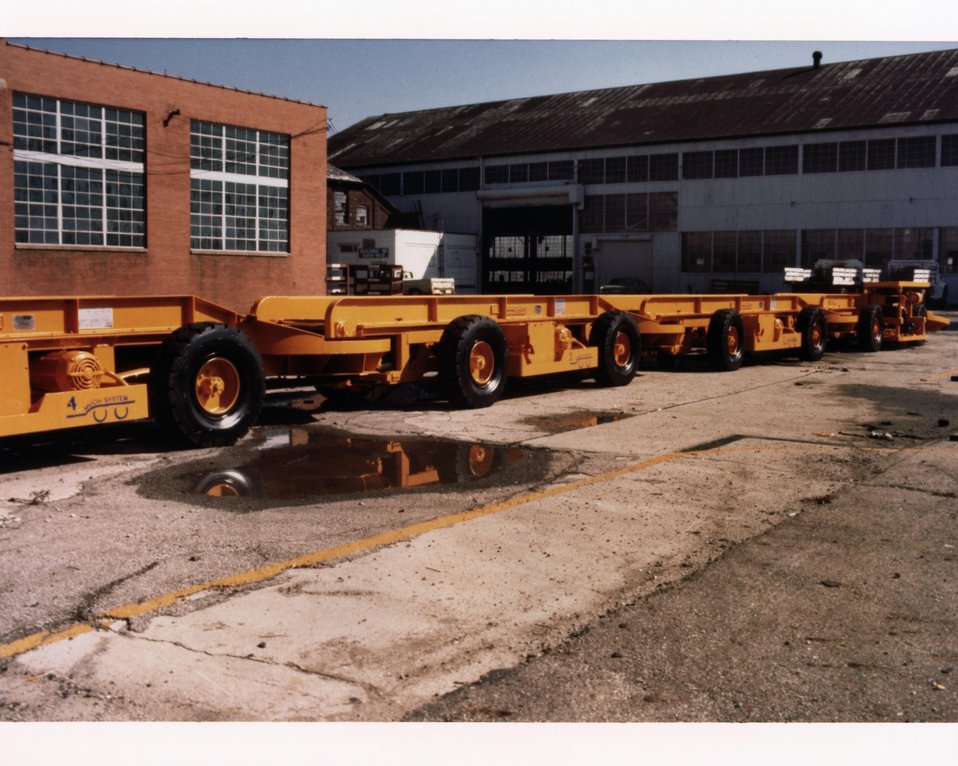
FOUR OF THE TWELVE VEHICLES BUILT WHICH COMPRISE THE 'MUCH' SYSTEM, A TYPE OF CONTINUOUS FACE HAULAGE

THIS SYSTEM HAS THE POTENTIAL FOR INCREASING SHIFT PRODUCTION UP TO 45 %.